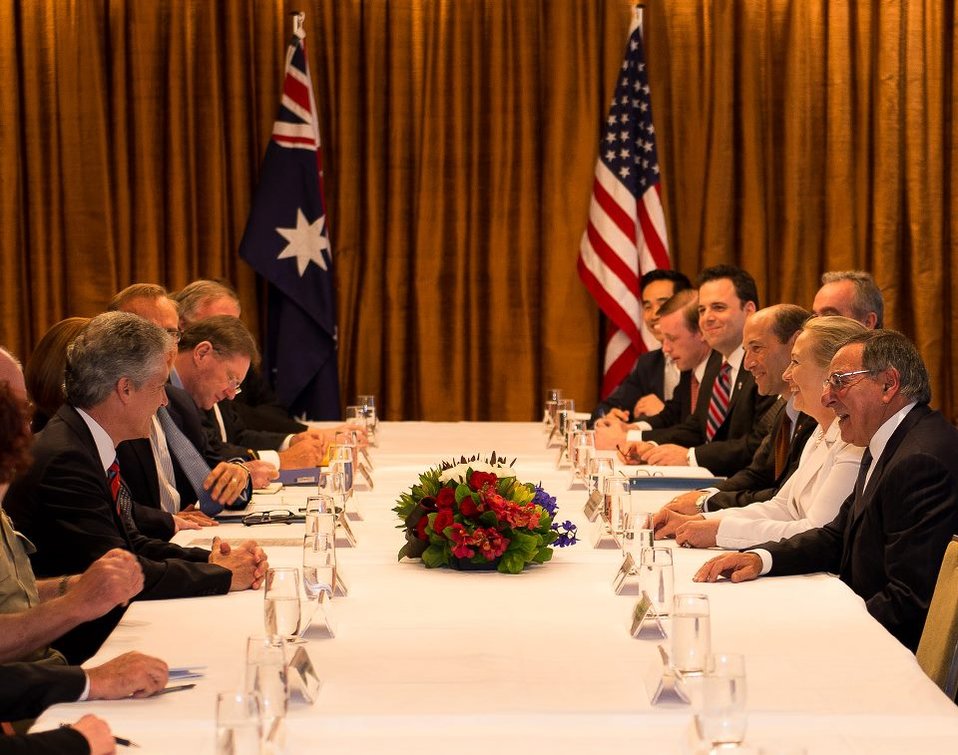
Secretaries Clinton and Panetta Meet With Australian Prime Minister Gillard, Foreign Minister Carr, and Defense Minister Smith

U.S. Secretary of State Hillary Rodham Clinton and U.S. Secretary of Defense Leon Panetta meet with Australian Prime Minister Julia Gillard, Australian Foreign Minister Robert Carr, and Australian Defense Minister Stephen Smith in Perth, Australia, November 13, 2012. [U.S. Embassy in Canberra, Australia photo by Travis Longmore/ Public Domain]